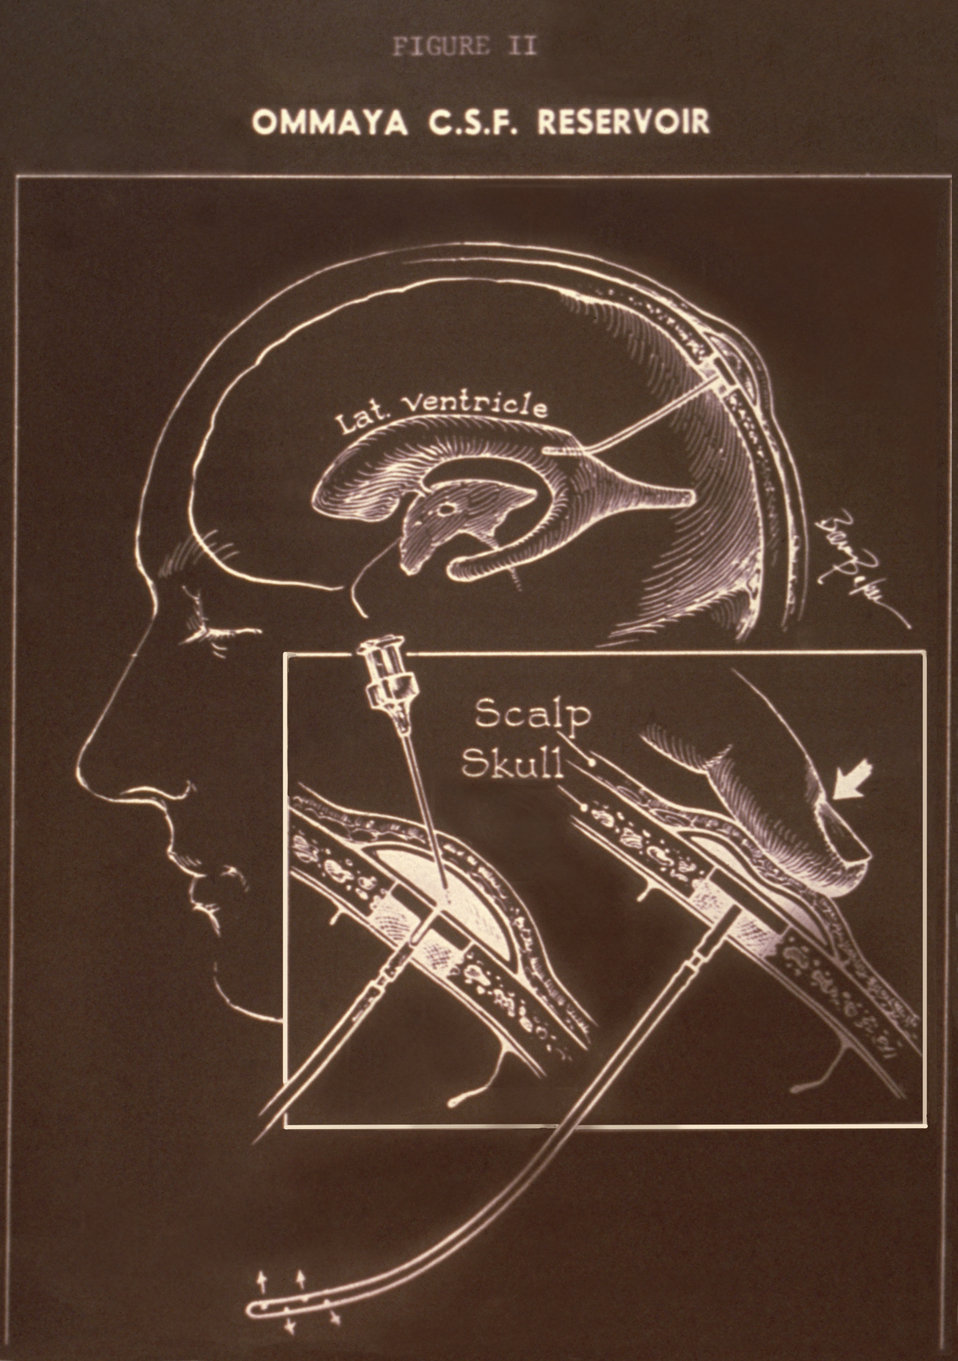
Illustration of Omaya valve implanted to instill medicine into brain